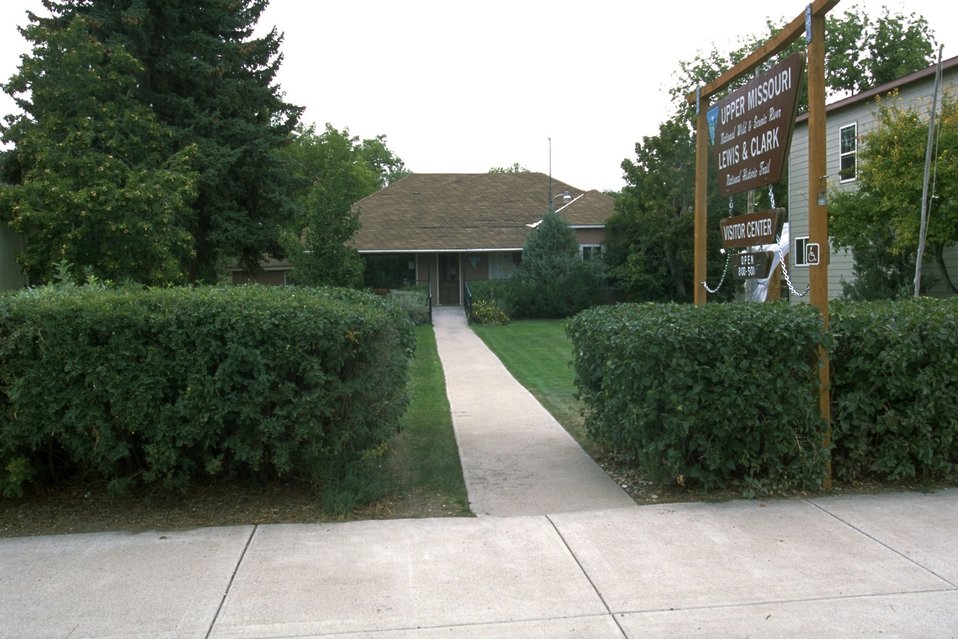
Old BLM visitor contact station in Fort Benton